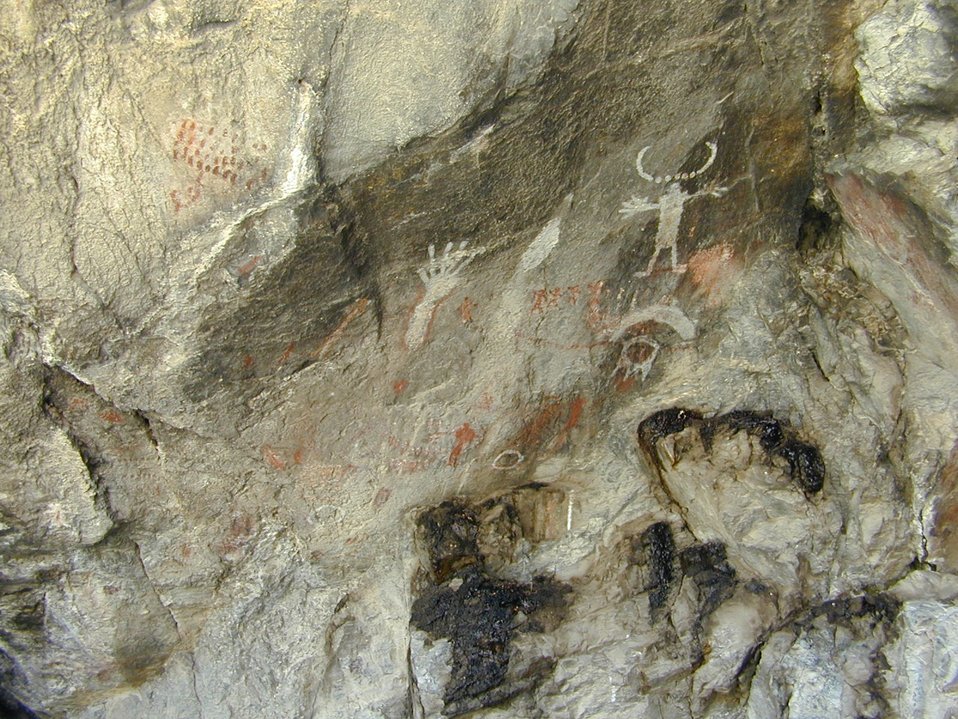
Birch Creek Valley Salmon Field Office Upper Columbia-Salmon Clearwater District